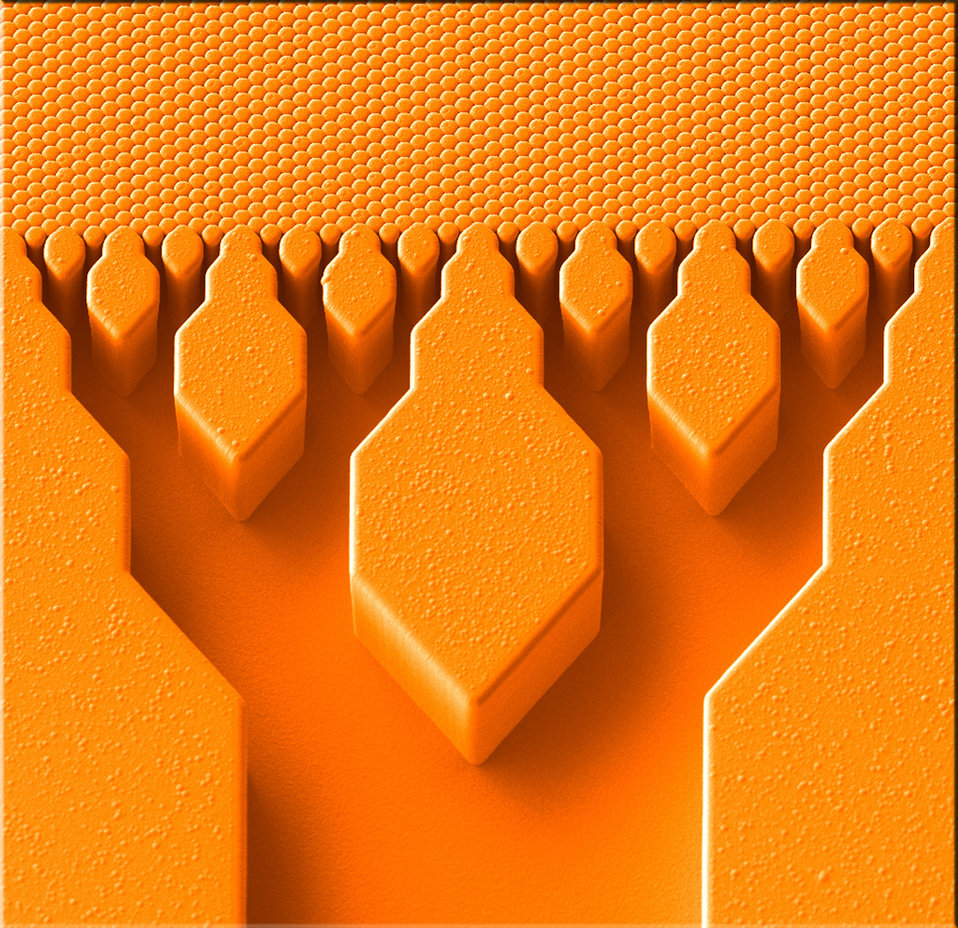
AT OAK RIDGE NATIONAL LABORATORY, THE INTEGRATED SILICON PILLAR ARRAY IS COMPOSED OF 18 MICRON TALL 800 MM WIDE PILLARS IN A HEXAGONAL ARRANGEMENT.

The interstitial spaces between pillars form a perfectly ordered network of nanofludic channels with widths from below 100 to 900nm. The exact channel width is tailored by overcoating pillars with highly conformal layer using plasma enhanced chemical vapor deposition (PECVD) or atomic layer deposition (ALD). The bifurcating (tree-like) system of channels is up to 250 micron wide and provides an interface between the network of nanopores and the macroscopic experimental environment. This image was originally produced in black and white and was colorized afterward.